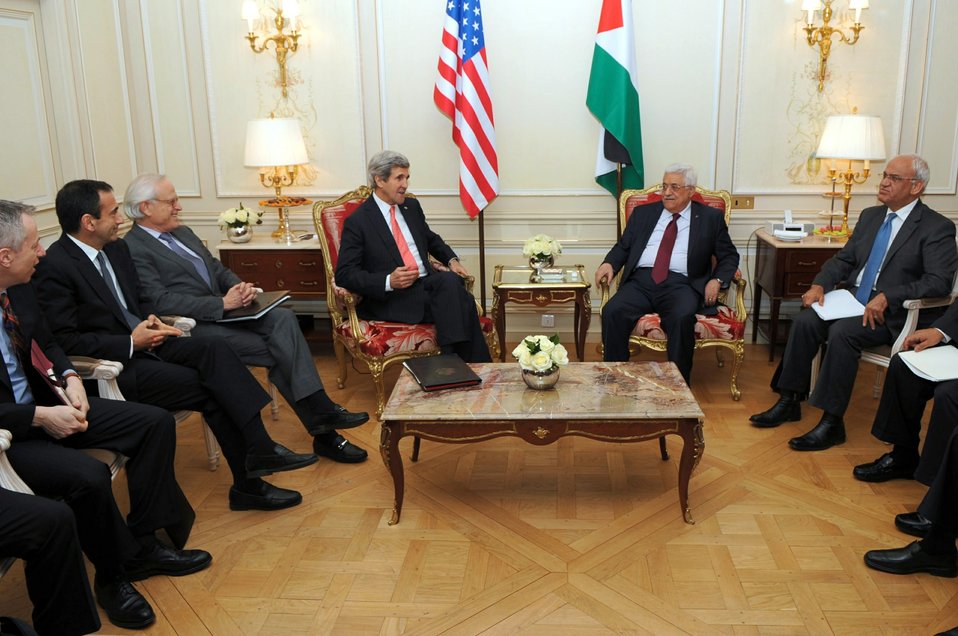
Secretary Kerry Meets With Palestinian Authority President Abbas

U.S. Secretary of State John Kerry and his team sit with Palestinian Authority President Mahmoud Abbas before a meeting in Paris, France, on February 19, 2014.